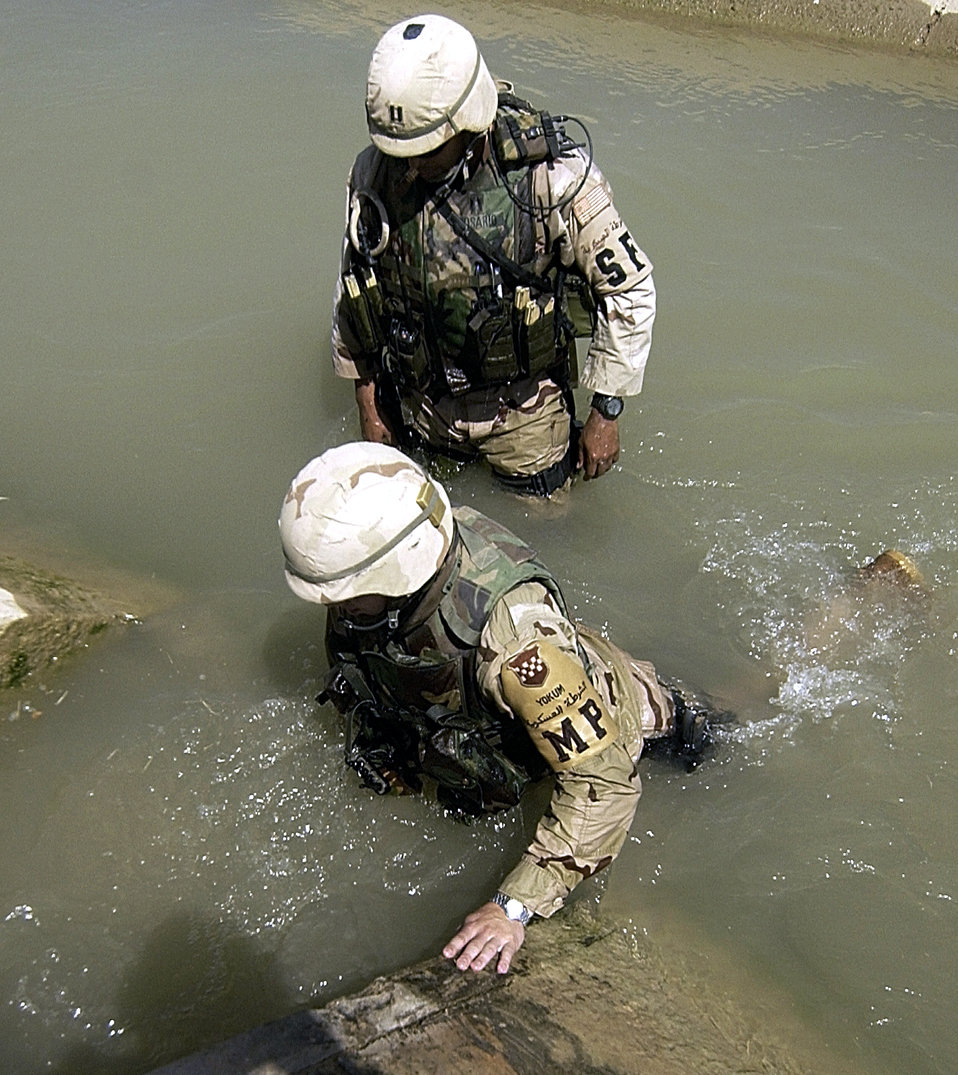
Weapons search

BALAD AIR BASE, Iraq -- While on a perimeter sweep here U.S. Army Spc. Shane Yokum (front) and Capt. Pedro Rosario search an irrigation canal for possible hidden weapons caches Aug. 1.Capptain Rosario is the deputy commander of the 332nd Air Expeditionary Security Forces Squadron and Specialist Yokum is a military policeman with to the 362nd Military Police Battalion.